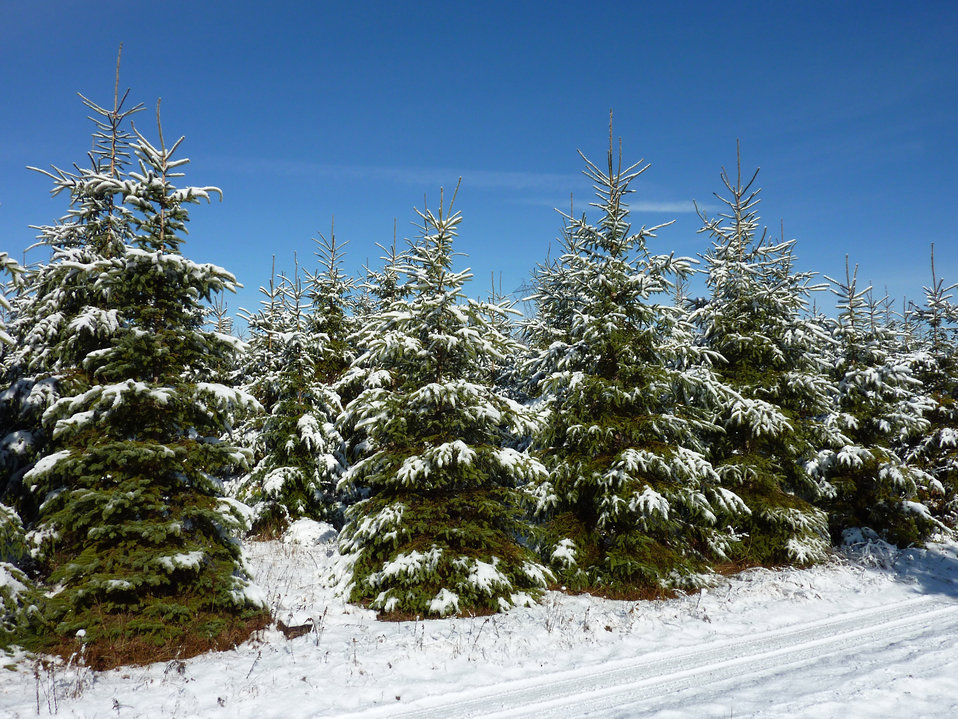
Spruce grove

Tree planting at the beginning of winter.